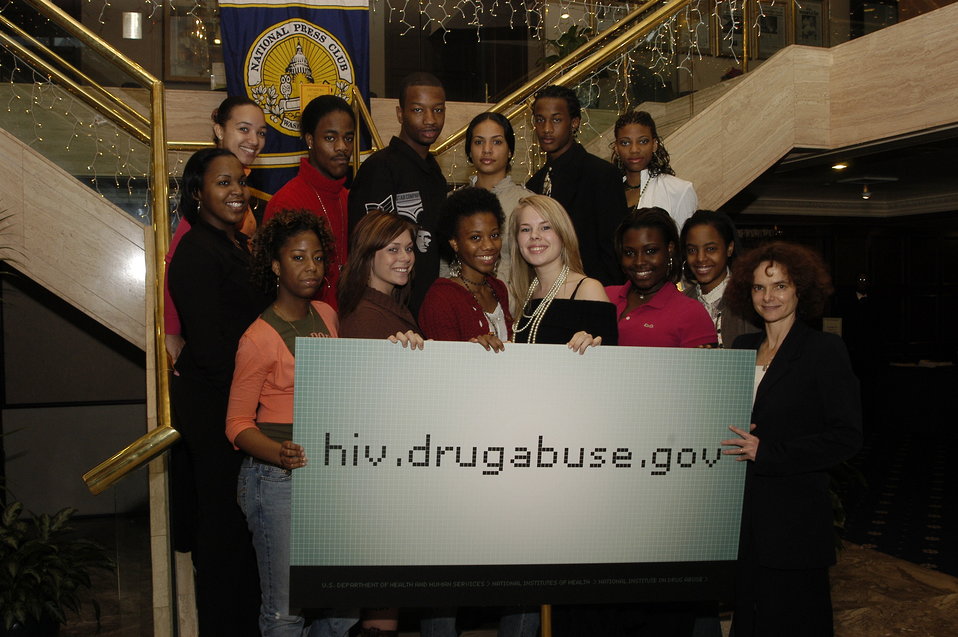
Dr. Volkow and Teens

Dr. Nora Volkow and local teens at launch of campaign about the link between drug abuse and HIV.